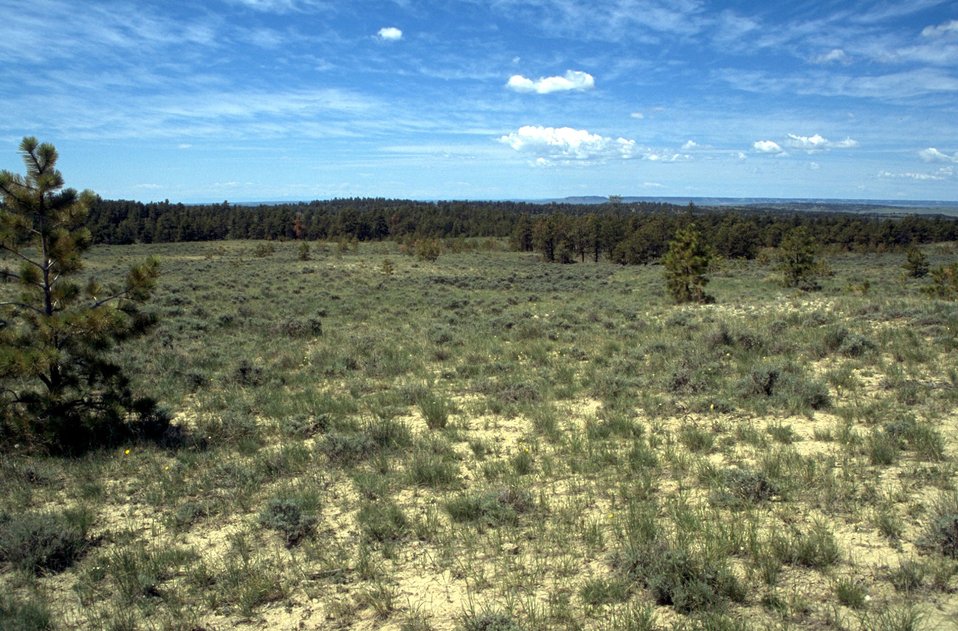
Sagebrush and ponderosa pine trees in the OHV Area 1 in the Shepherd Recreation Area